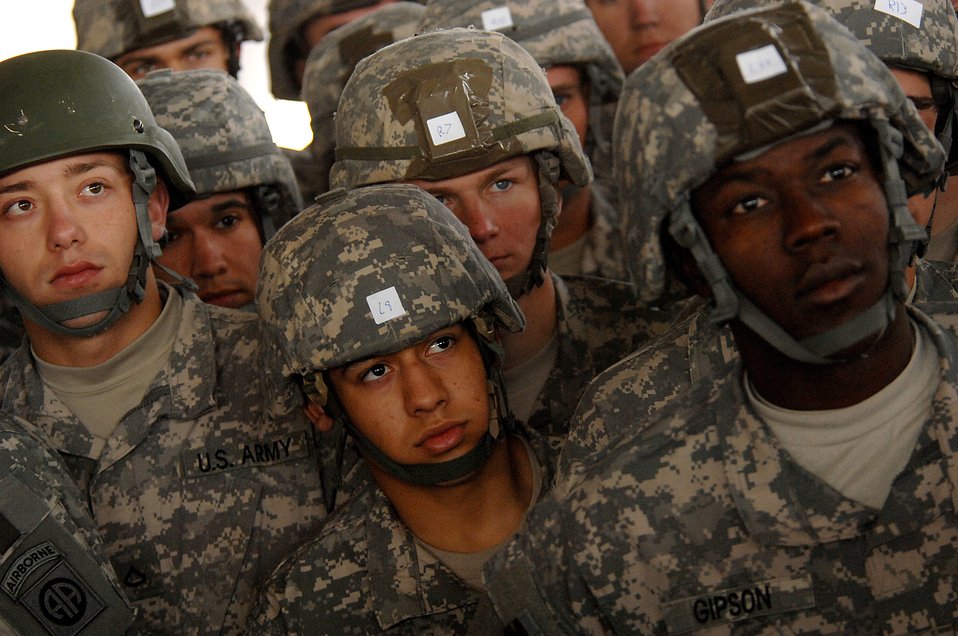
Operation Toy Drop

Soldiers from the Army's 82nd Airborne Division from Fort Bragg, N.C., listen to the jumpmaster while attending parachute landing fall class Dec. 5 before their jump for Operation Toy Drop at Pope Air Force Base, N.C. Operation Toy Drop is an annual Airborne jump at Fort Bragg in its 11th year hosted by the Army Civil Affairs and Psychological Operations Command (Airborne), and supported by Fort Bragg's XVIII Airborne Corps and the Air Force Reserve Command's 440th Airlift Wing at Pope AFB that gives Soldiers and Airmen the opportunity to help local families in need over the holidays while boosting morale and incorporating valuable training. More than 3,000 Soldiers donated a toy for a lottery ticket and the chance to jump under a foreign jumpmaster, earning them their foreign jump wings. This year, German and Irish jumpmasters will be issuing the commands from C-130 Hercules aircraft during the operation.